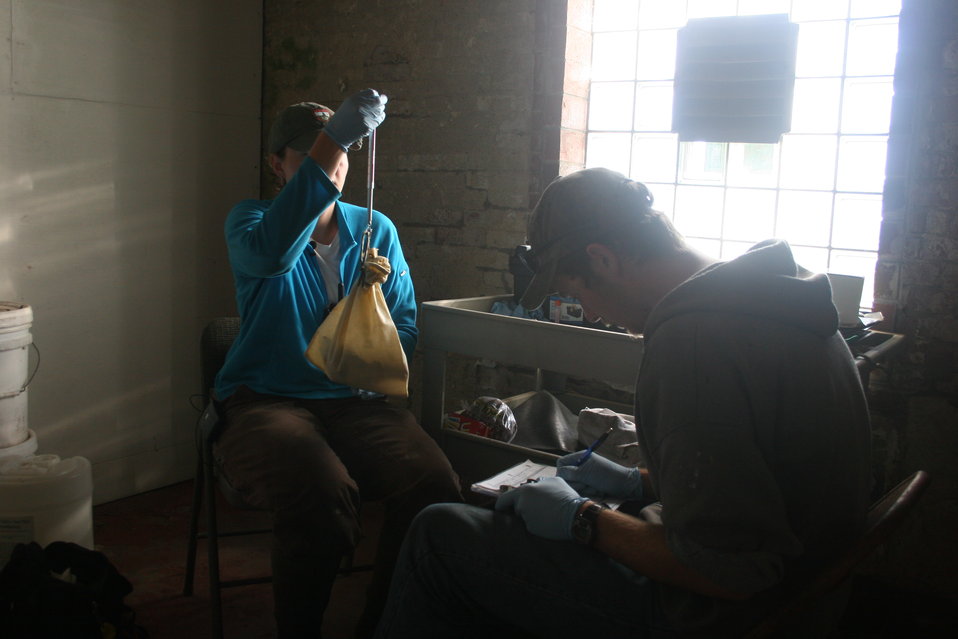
Weighing A Puffin